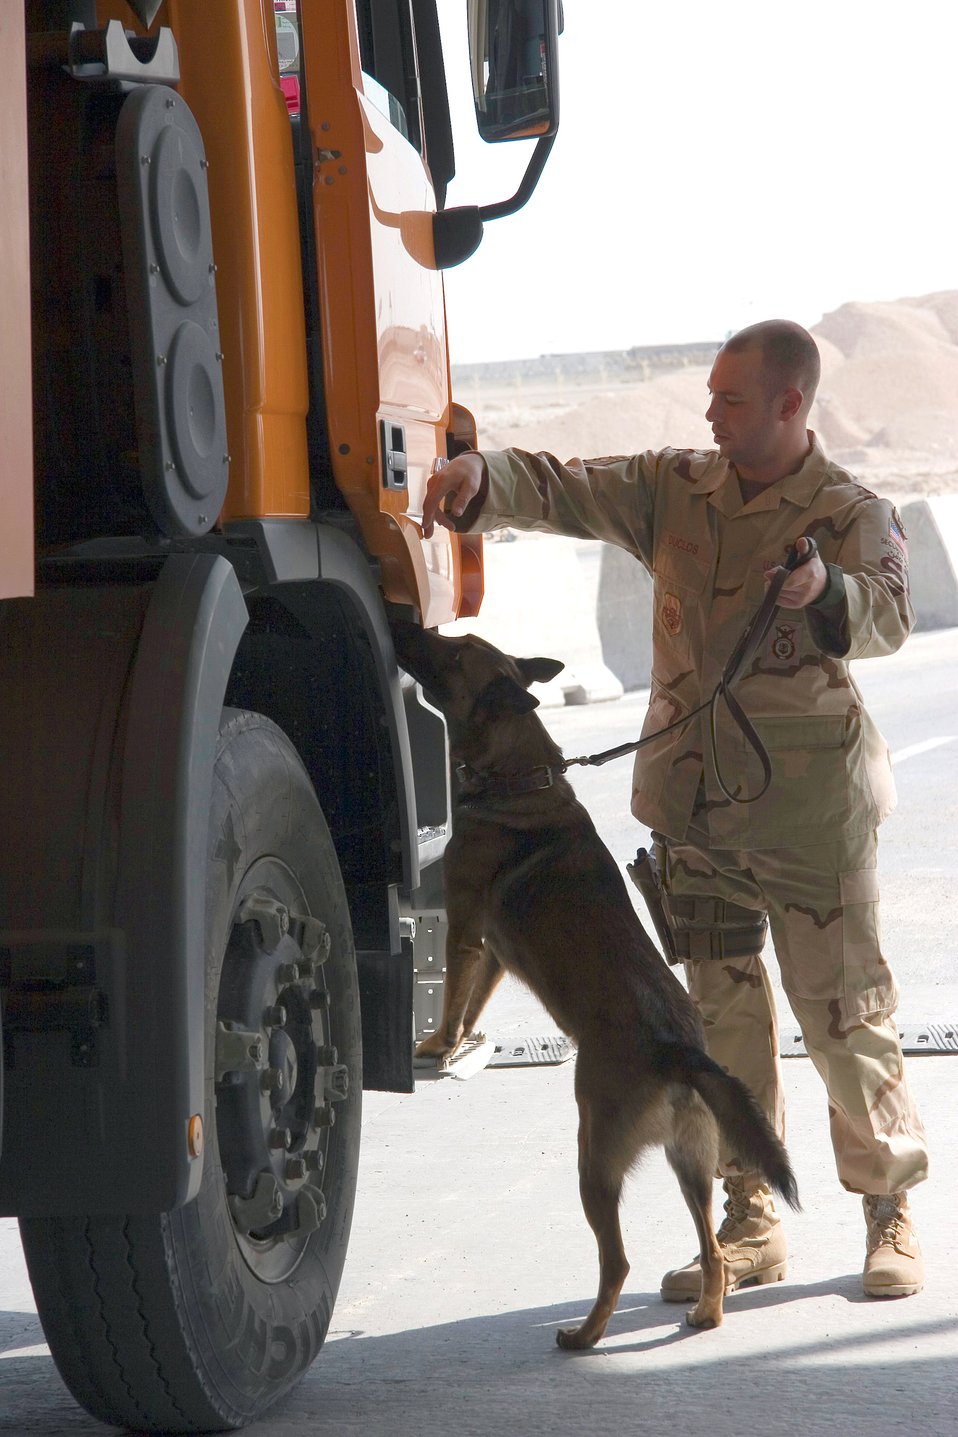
Working dog teams search, patrol together

Staff Sgt. Spencer Duclos conducts a vehicle search with his dog, Boo, at the vehicle search pit Feb. 13 in Southwest Asia. Sergeant Duclos is a military working dog handler assigned to the 379th Expeditionary Security Forces Squadron.